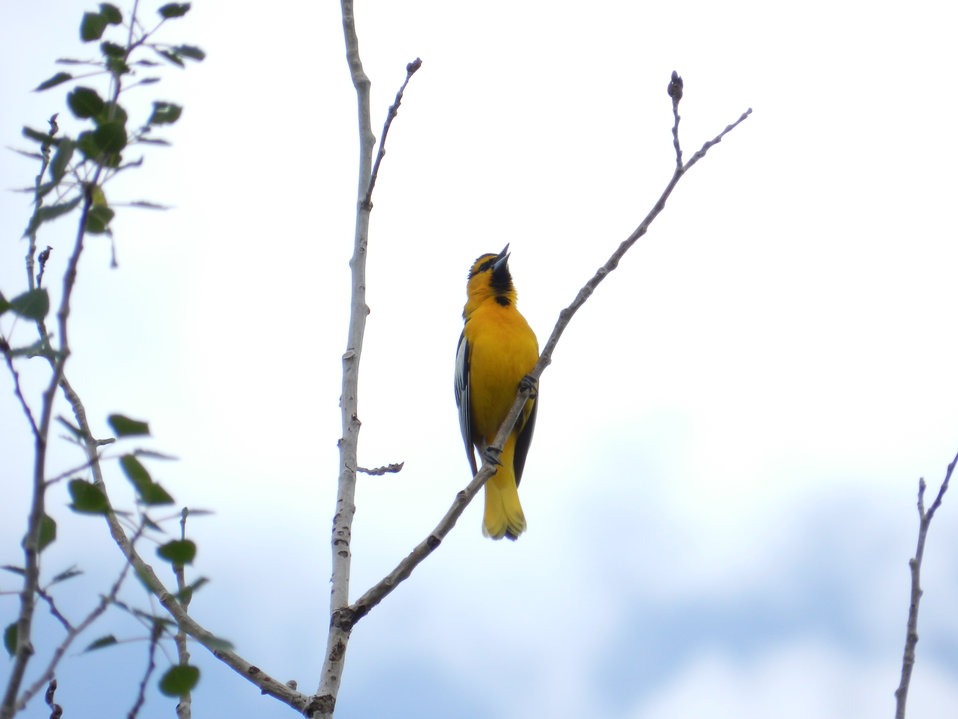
Northern oriole, Fort Collins, CO.

Credit: Pedro 'Pete' Ramirez, Jr. / USFWS